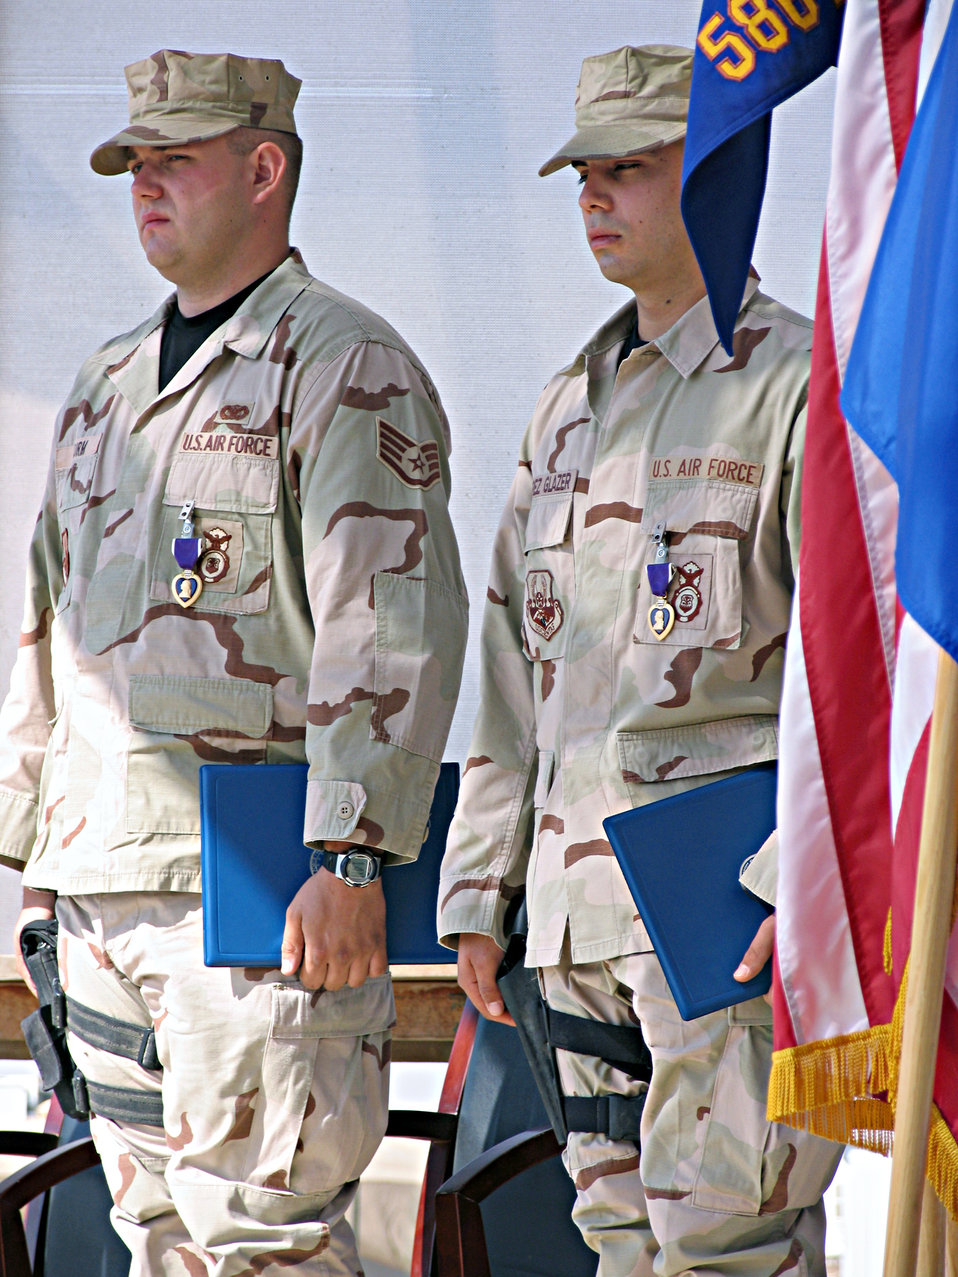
Purple Ceremony

Staff Sgt. Rory Sturm and Airman Kevin Perez Glazer were presented Purple Hearts at a ceremony Nov. 14 at Camp Bucca, Iraq, for wounds received when their patrol Humvee was struck by an improvised explosive device Oct. 16. Both Airmen are deployed to the 586th Expeditionary Security Forces Squadron area security operations.